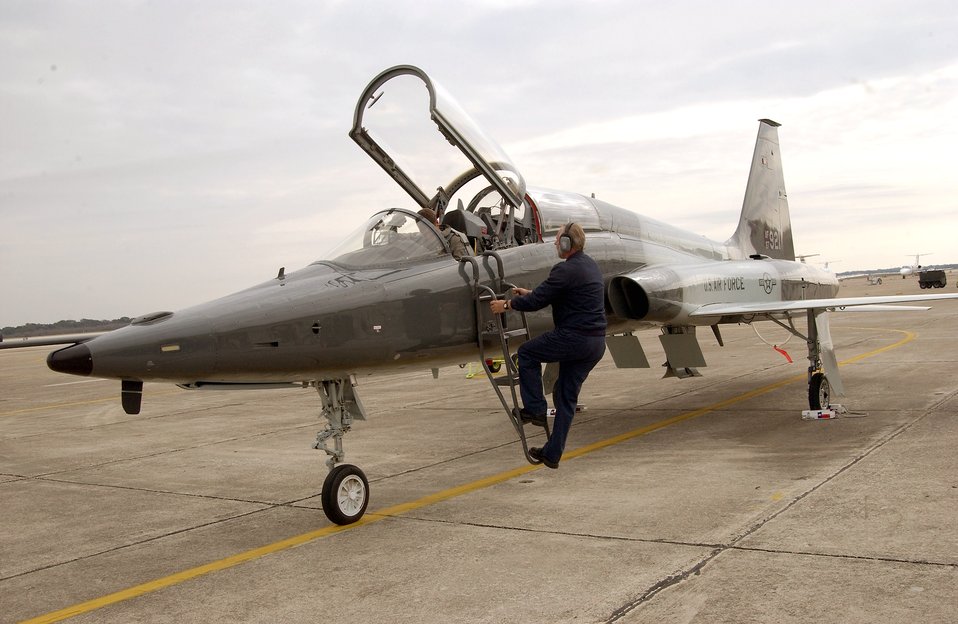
T-38 Talon crashes at Sheppard AFB

A T-38C Talon similar to this one crashed May 1 at Sheppard Air Base, Texas. The T-38 Talon is a twin-engine, high-altitude, supersonic jet trainer used in a variety of roles because of its design, economy of operations, ease of maintenance, high performance and exceptional safety record. It is used primarily by Air Education and Training Command for undergraduate pilot and pilot instructor training. Air Combat Command, Air Mobility Command and the National Aeronautics and Space Administration also use the T-38 in various roles.